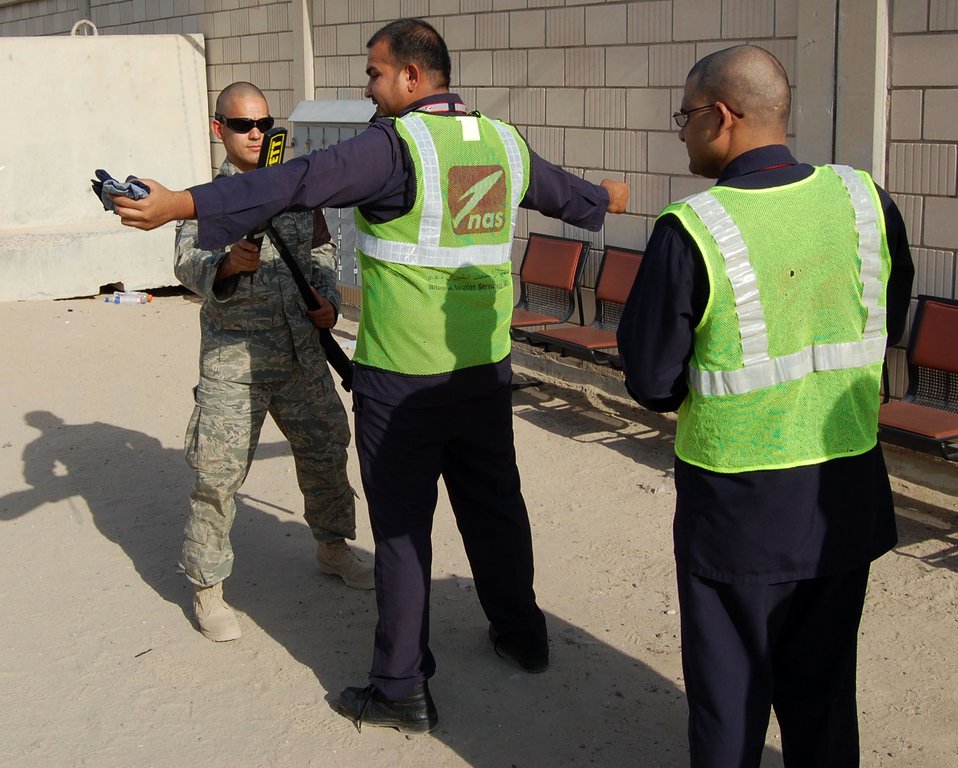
Force protection specialist keep movment safe, seamless

Staff Sgt Ismael Nava runs a search wand over a third country national Sept. 25 in a search pit at an undisclosed location. Sergeant Nava is a 387th Expeditionary Support Squadron force protection specialist deployed from F.E. Warren Air Force Base, Wy.